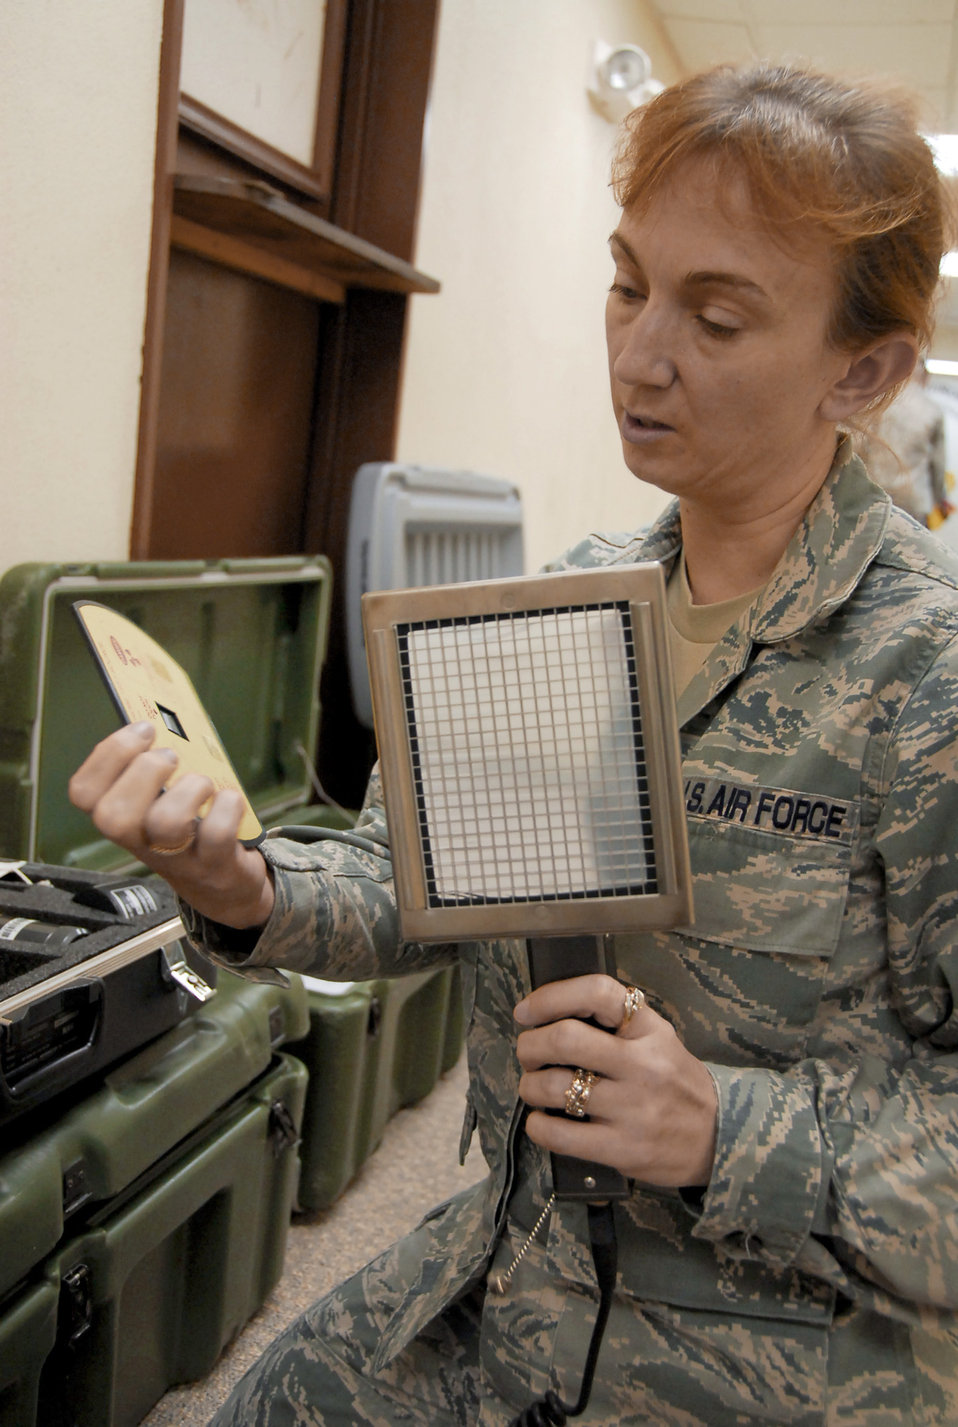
Bioenvironmental techs test for toxins near Tokyo

Tech. Sgt. Joanie Long inspects equipment March 15, 2011, at Kadena Air Base, Japan. A team from the 18th Aerospace Medicine Squadron Bioenvironmental Engineering Flight took the equipment to test for radioactive and other harmful chemicals and materials. Sergeant Long is the readiness NCO in charge at the 18th AMDS Bioenvironmental Engineering Flight.